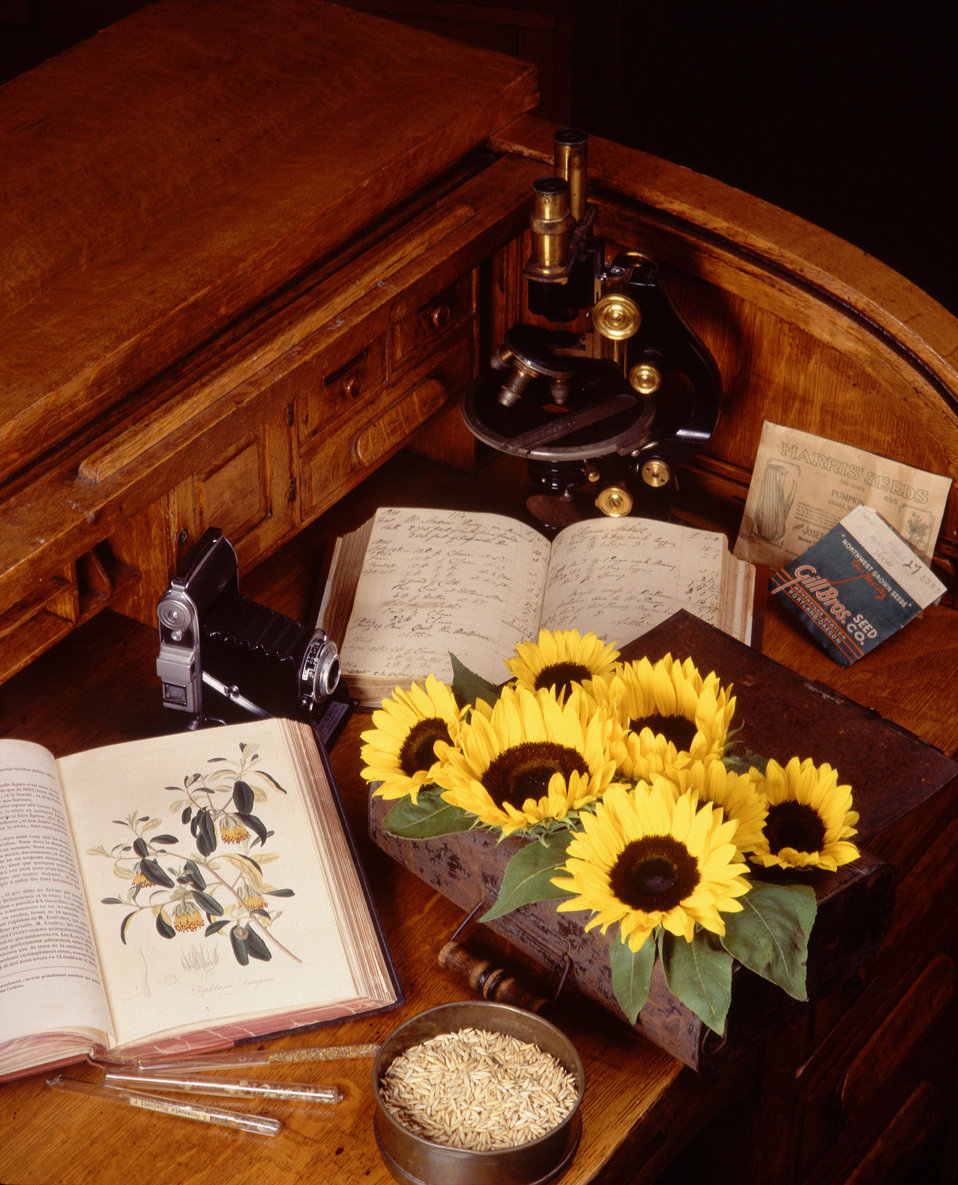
Collecting and freely sharing plants and seeds that grow around the world is one of the U.S. Department of Agriculture's (USDA) longest continuous programs.